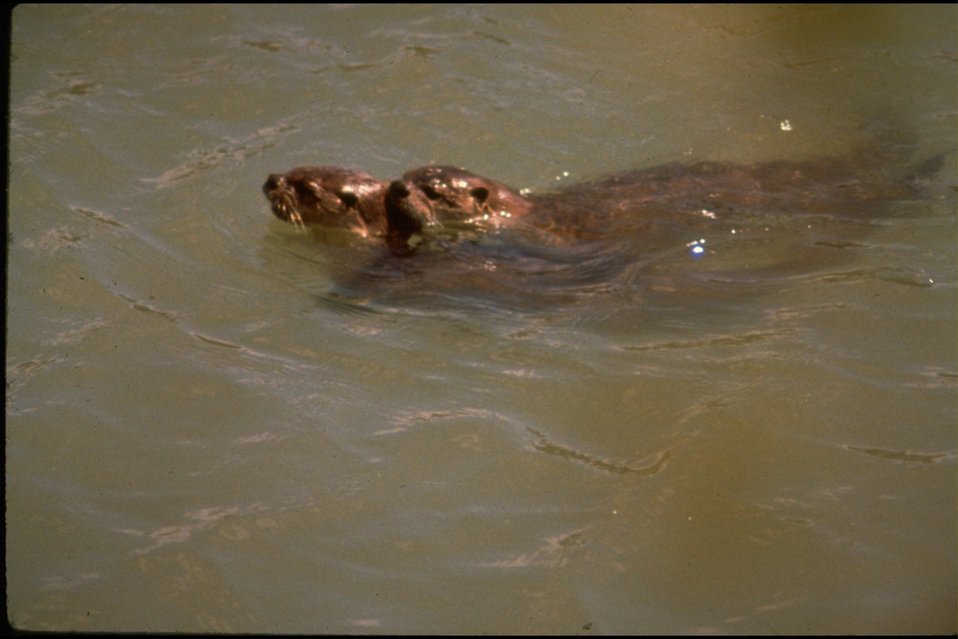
Rogue River - River Otter.